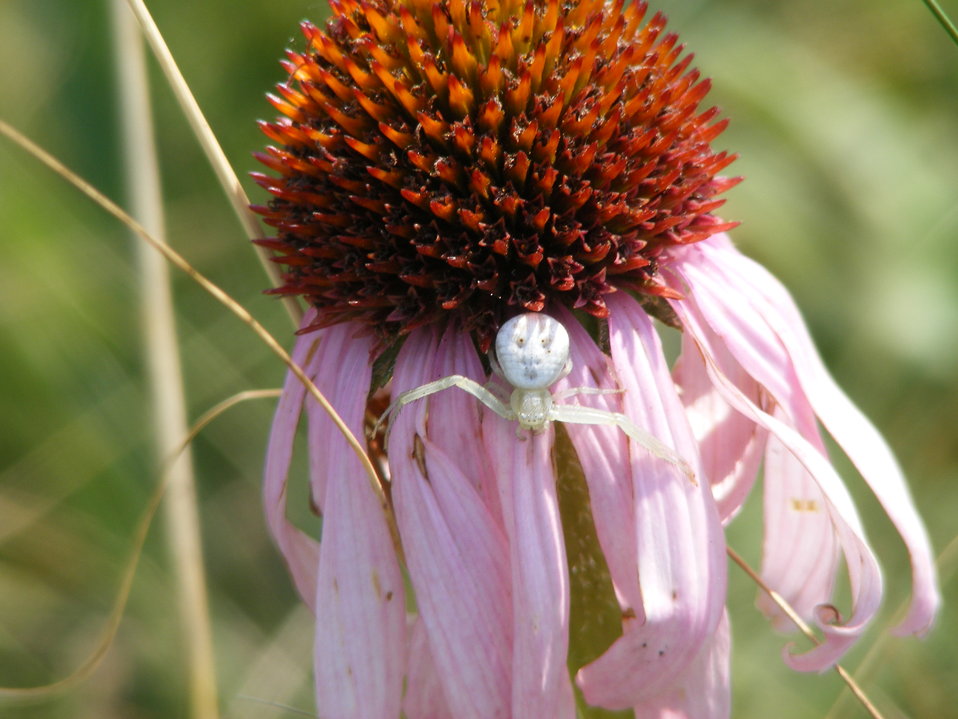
Waiting for a Meal

A crab spider sits waiting on a purple coneflower (Echinacea angustifolia). Coneflowers are used by bees, butterflies, and other insects for nectar, eventually rewarding a patient spider. Photo was taken on a Waterfowl Production Area in Waubay Wetland Management District in South Dakota.